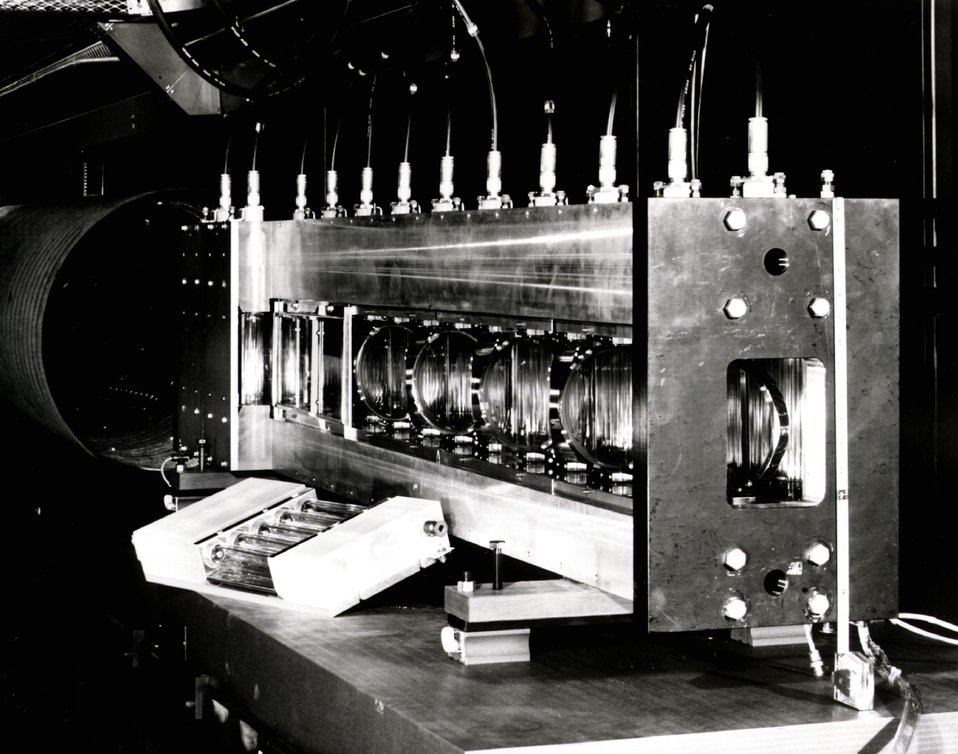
Photograph shows a long-path, glass disk laser made of meodynium glass which is used in experiments in laser fusion. Circa 1972.